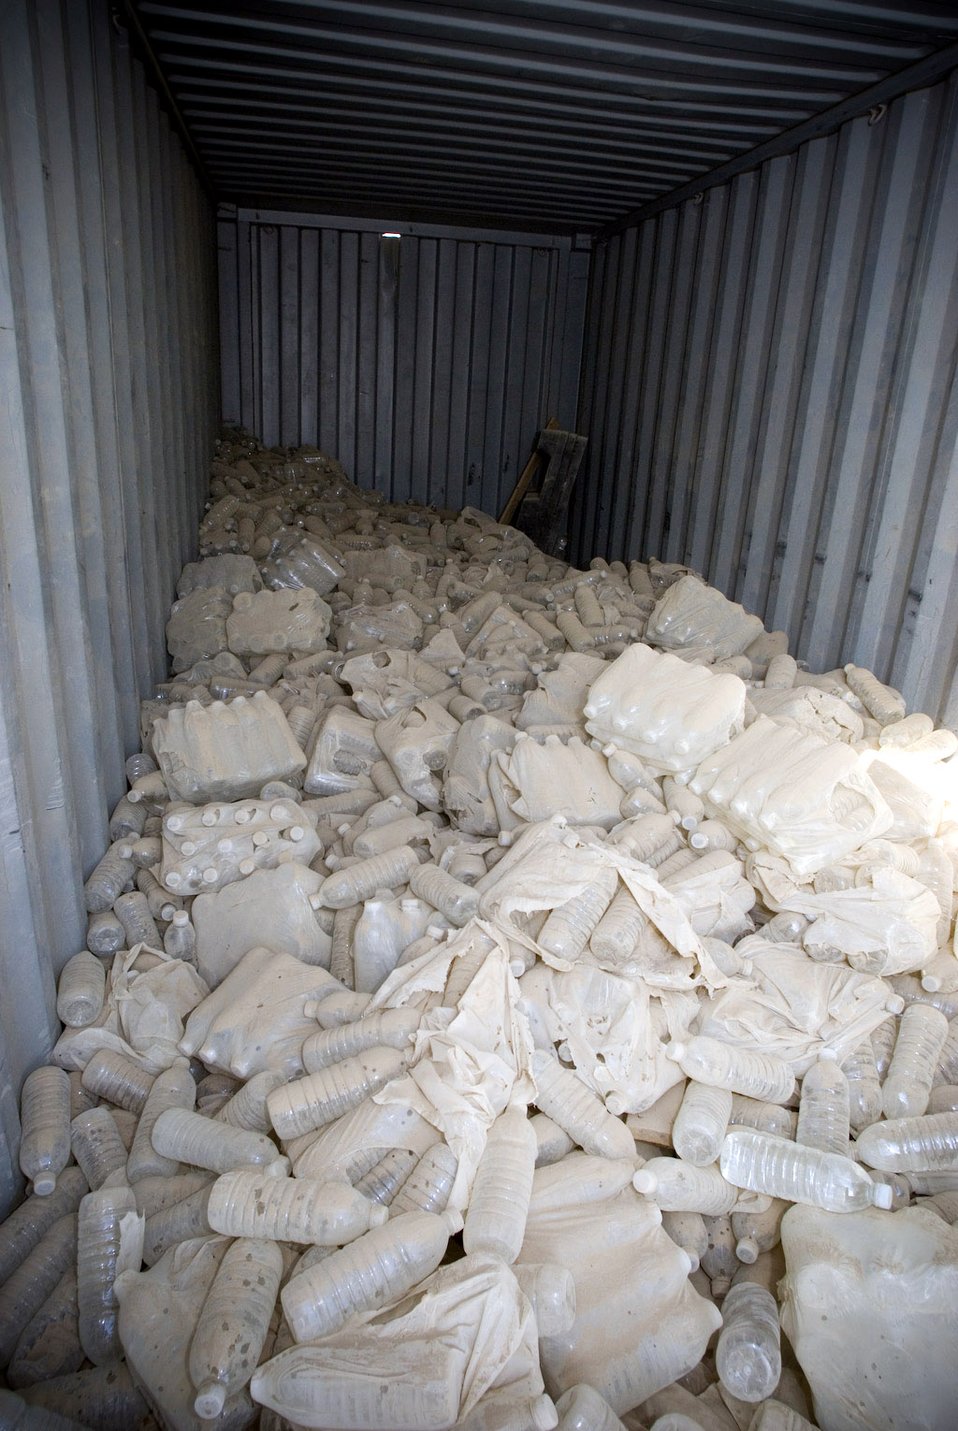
Mobile readiness team supports Army in Iraq

Bottled water recovered by Material Recovery Team III with the 732nd Expeditionary Logistics Readiness Squadron are placed inside a container express Oct. 19 at Camp Corregidor, Iraq. Serviceable assets recovered from the container express are inventoried and redistributed to Army units throughout Iraq. Airmen of various career fields volunteer to augment the Army in nontraditional